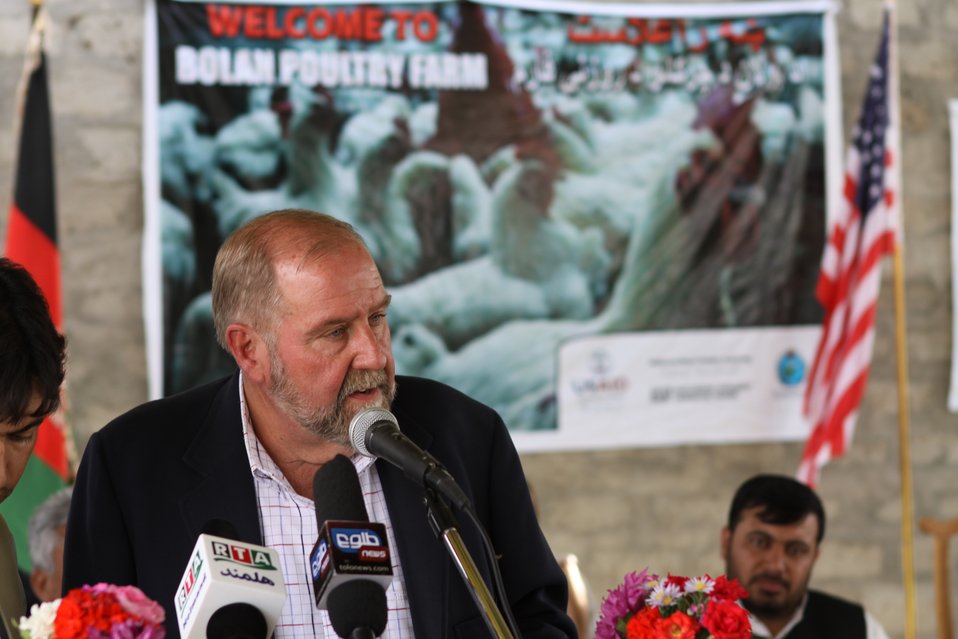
Bolan Poultry Farm